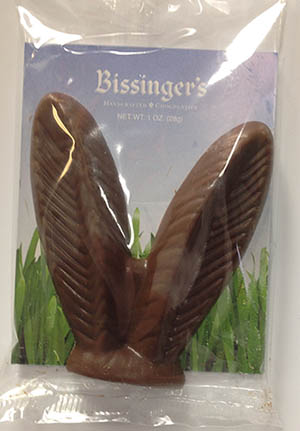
RECALLED – Dark Chocolate Bunny Ears

April 10, 2014 – Product Recall – Bissinger’s Announces a Voluntary Recall of Its Dark Chocolate Bunny Ears Due to Undeclared Milk.